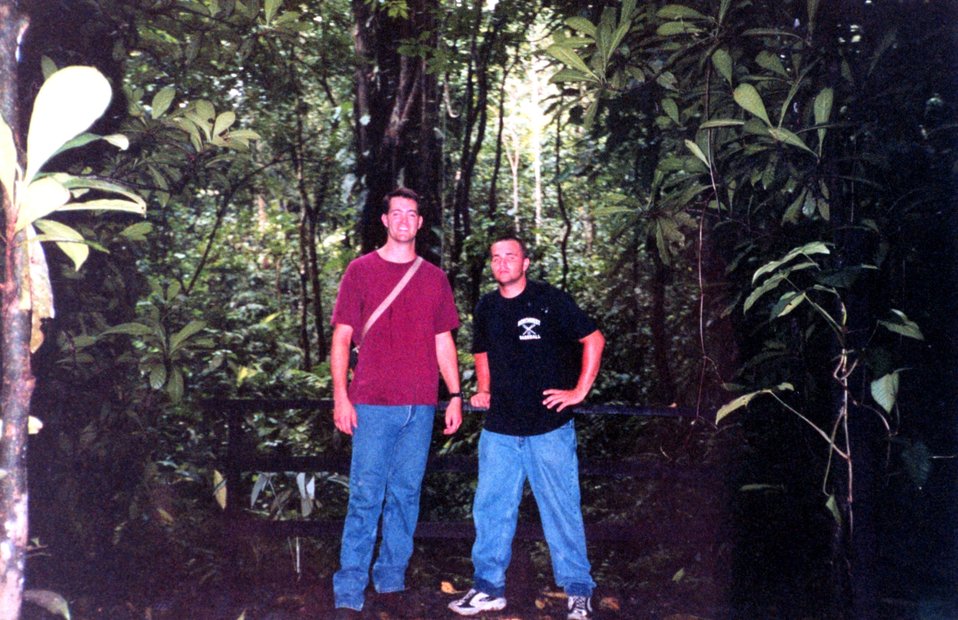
NOAA Corps Ensign Doug Krause with deck hand Mike Theberge at the Carara Biological Reserve.